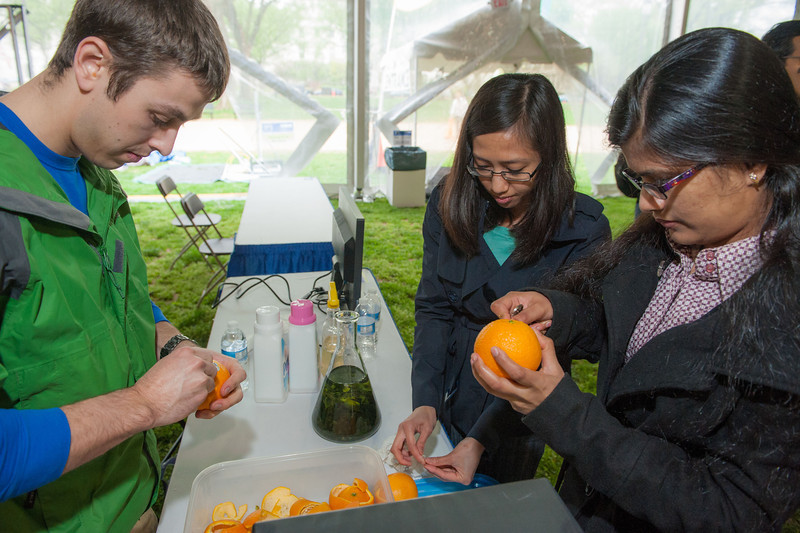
April 18, 2013 - P3 Design Expo, University of Massachusetts - Lowell

Go Green! Clean with Fruit Peels – Safer Bioderived Detergents

These students are replacing toxic detergents with greener surfactants from algae and fruit waste.

UMassLowell Team P3 page
UMassLowell Team’s Facbook page

People Prosperity and the Planet: National Sustainable Design Expo on the National Mall 18-19 April 2013